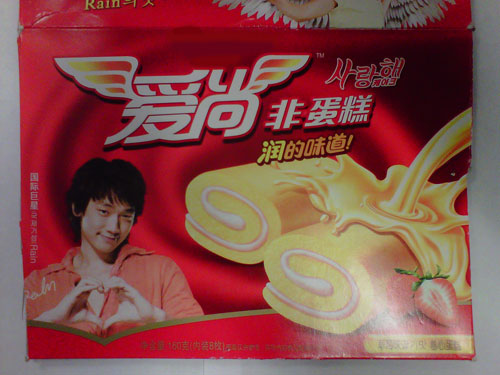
RECALLED - Rain Swiss Roll (Strawberry Flavor and Coconut Flavor)

April 20, 2011 - Product Recall - S&M (USA) Enterprise Corp Issues Allergy Alerts on Undeclared Eggs In Rain Swiss Roll
(Strawberry Flavor) and (Coconut Flavor).